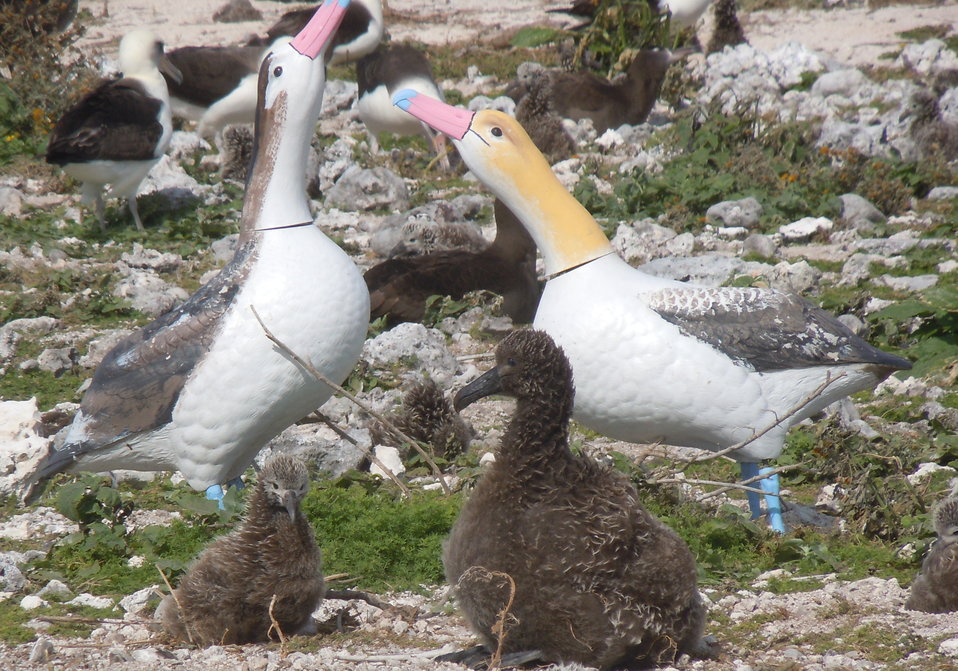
short-tailed albatross chick with decoys

Fish and Wildlife Service biologists used these short-tailed albatross decoys to help attract some of the critically endangered birds to Midway Atoll. The chick on the left is a Laysan albatross. The larger chick on the right is a short-tailed albatross, the second of its kind hatched on Midway Atoll, in 2012.
Midway Atoll National Wildlife Refuge
March 2012